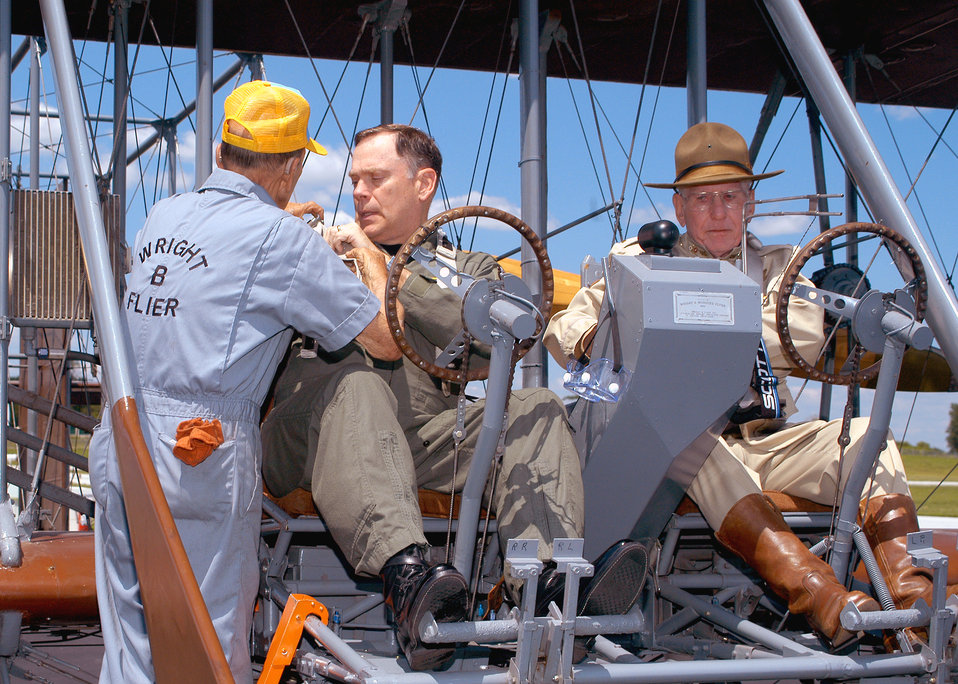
Wright B flight

DAYTON, Ohio (AFPN) -- A Wright B Flyer ground crew member helps Gen. John P. Jumper, Air Force chief of staff, strap into a replica of the Wright brothers first production airplane June 21. Pilot John Warlick, dressed in an Army Air Corps uniform, sits alongside ready for the ride. Jumper was here to speak to the national convention of the Order of the Daedalians. His visit to Dayton Wright Brothers Airport is a part of the Centennial of Flight festivities.